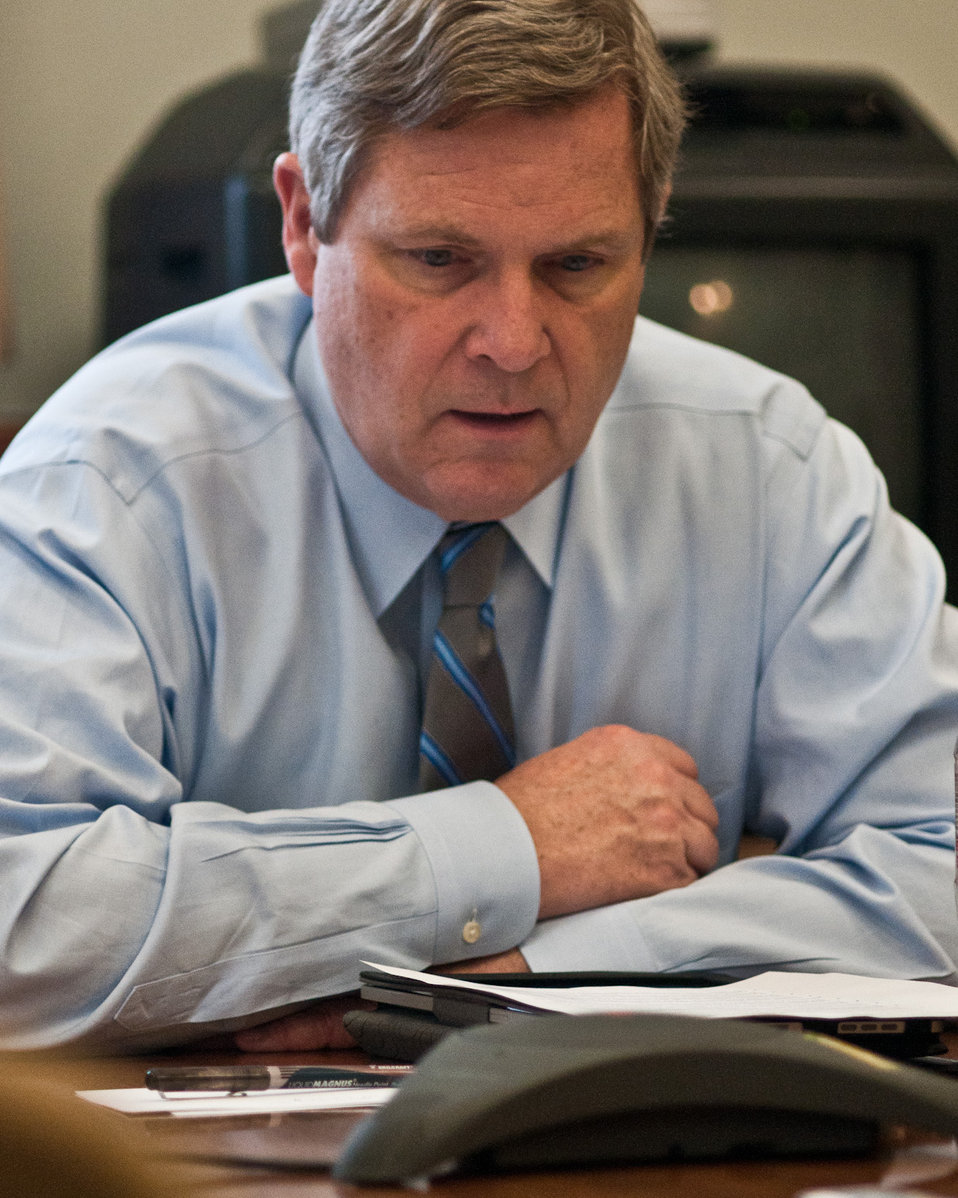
Agriculture Secretary Tom Vilsack participated in a conference call on Friday, Feb. 25, 2011; in Washington, D.C. with news media to announce and answer questions about an administrative claims process for Hispanic farmers and ranchers and women farmers and ranchers to resolve claims of discrimination in farm loan programs from 1981 – 2000.